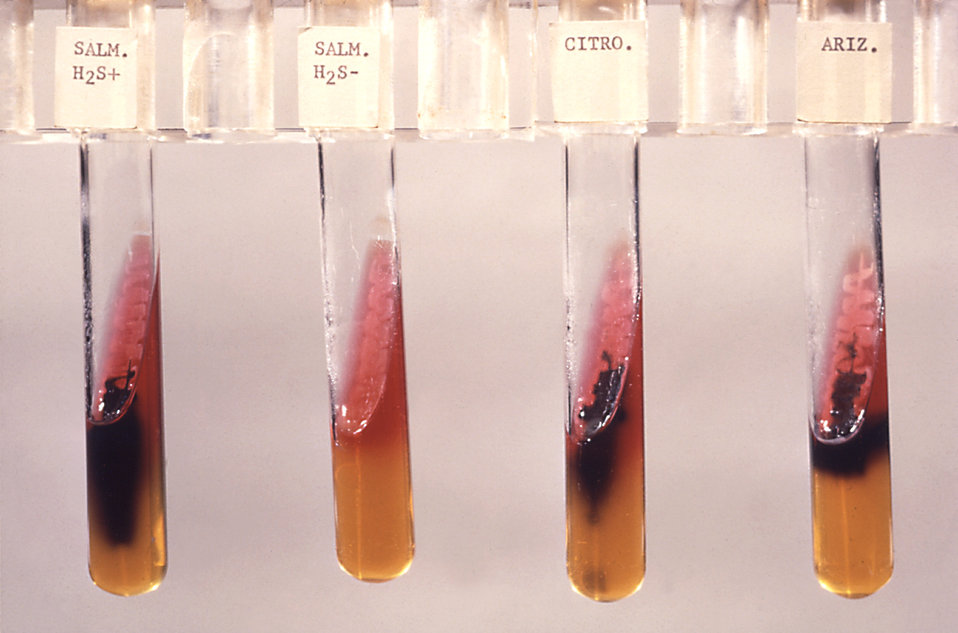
This triple sugar iron agar (TSI) tested for Salmonella (H2S ) and (H2S-); Citrobacter sp. and S. arizonae.